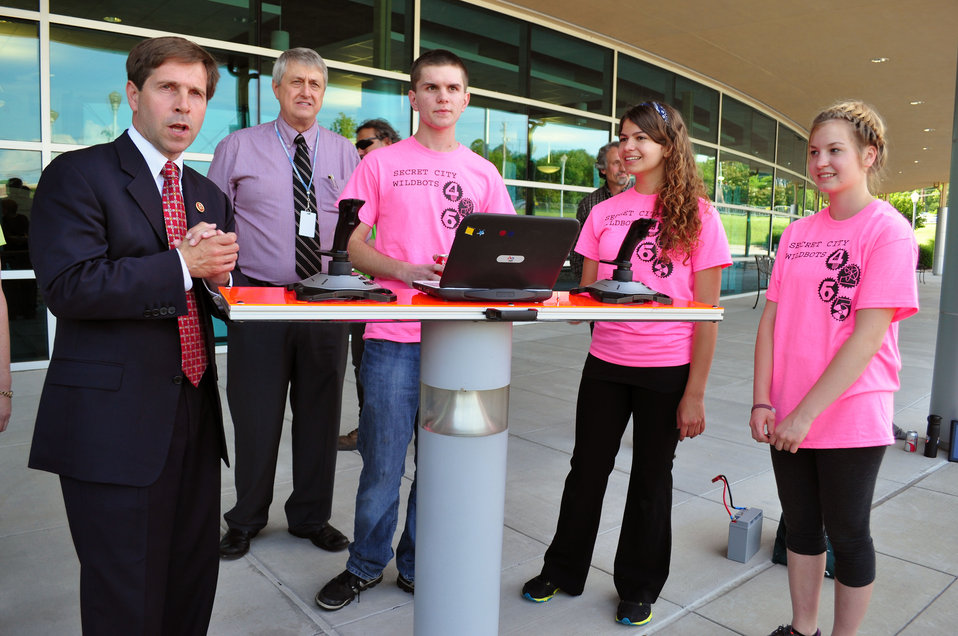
Congressman Chuck Fleischmann with Oak Ridge HS Robotics Team Tennessee Valley Corridor 2013 Oak Ridge

13-062 DOE photo Lynn Freeny 5-29-2013 Oak Ridge Tennessee